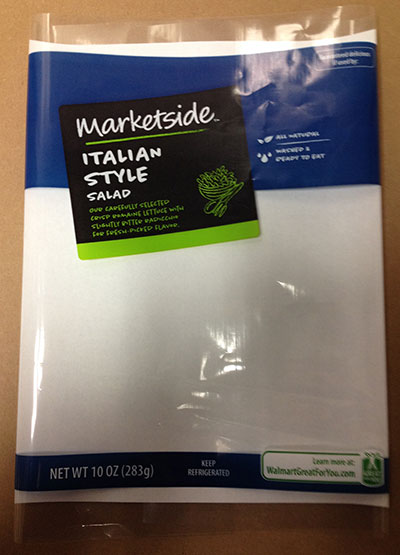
RECALLED – Variety of Bagged salads

March 13, 2014 – Product Recall – Dole Fresh Vegetables Voluntarily Recalls Limited Number of Bagged Salads Due to Possible Health Risk
.